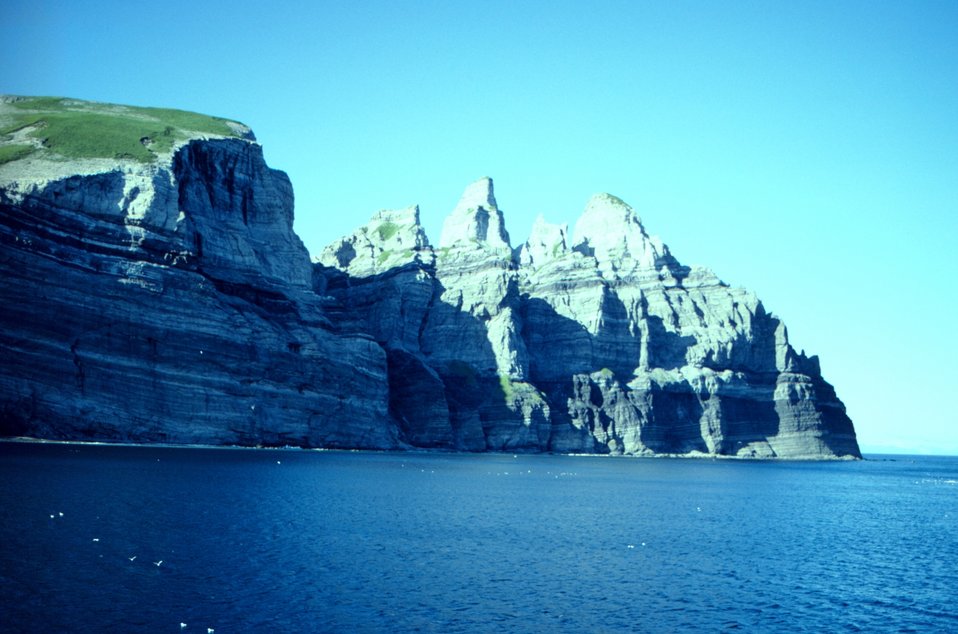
Castle Cape. White specks are birds.